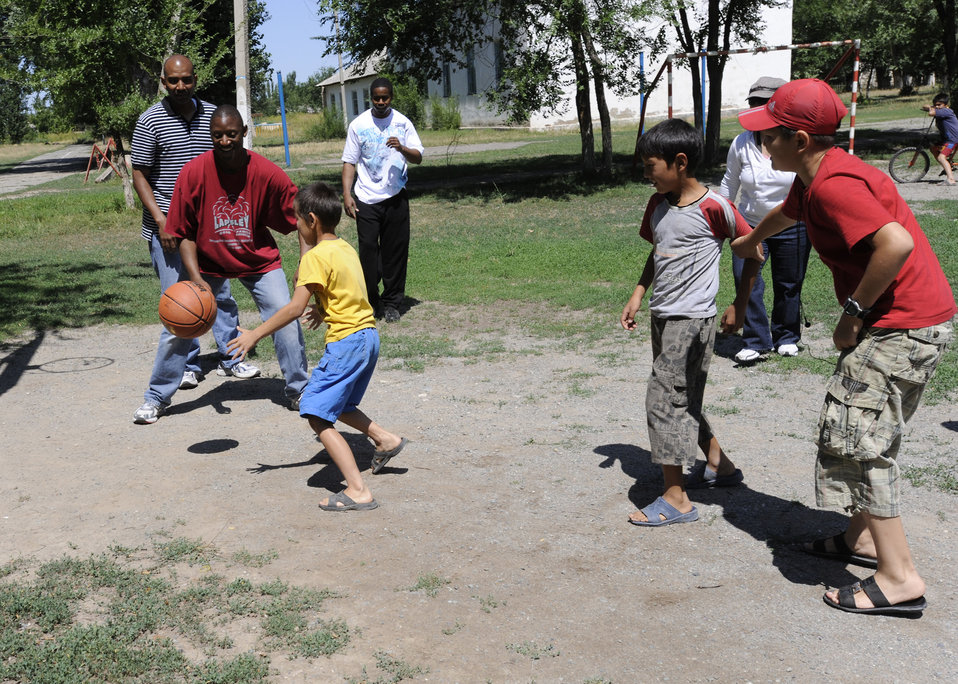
PA system to Kyrgyz school

Airmen from the 376th Expeditionary Communications Squadron watch as a Kyrgyz child dribbles toward a basketball hoop during the group's visit to the Kamyshanovka School July 1, 2011, in Kyrgyzstan. The Transit Center at Manas Airmen donated a public address system and sporting equipment to the village. They then spent the afternoon playing games with students and interacting with village officials.